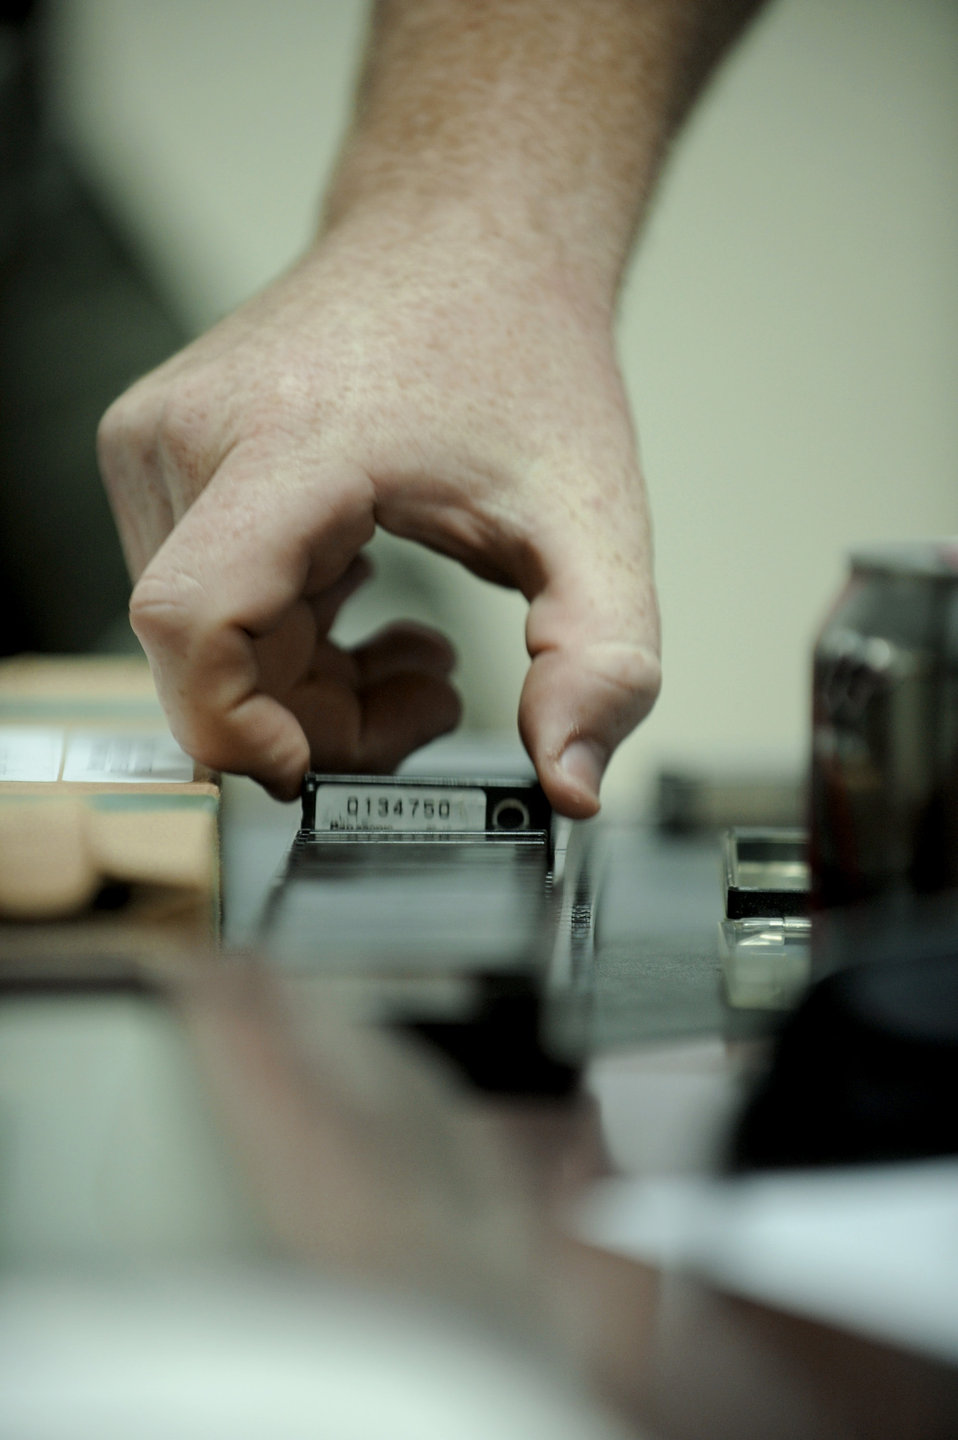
Airmen harness radiation to search vehicles

Ryan May prepares dosimeters for a training session with members from the 447th Expeditionary Security Forces Squadron on the Vehicle and Cargo Inspection System Feb. 19, 2011, at Sather Air Base, Iraq. The VACIS is a recent addition to the Sather AB vehicle inspection arsenal and increases the capability to provide security to the base. Mr. May is the Science Applications International Corp. in-country trainer.